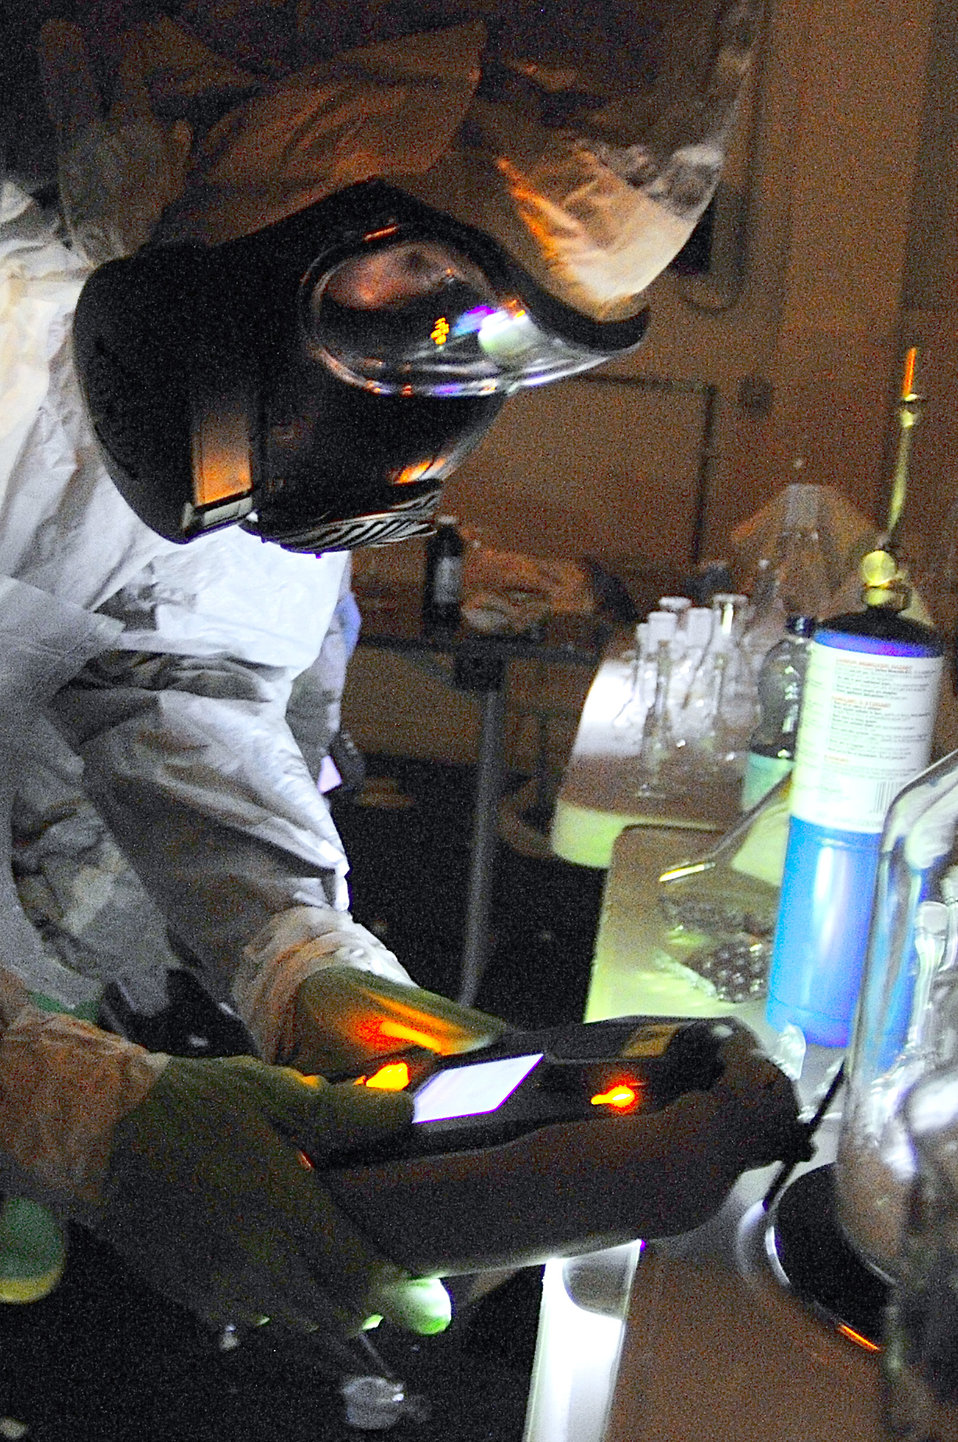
Airmen in Europe test threat responses

Staff Sgt. Joshua McDowell tests chemicals in a simulated emergency environment during the U.S. Air Forces in Europe Chemical, Biological, Radiological and Nuclear Challenge June 23 at Ramstein Air Base, Germany. Sergeant McDowell is a 52nd Civil Engineer Squadron emergency manager.